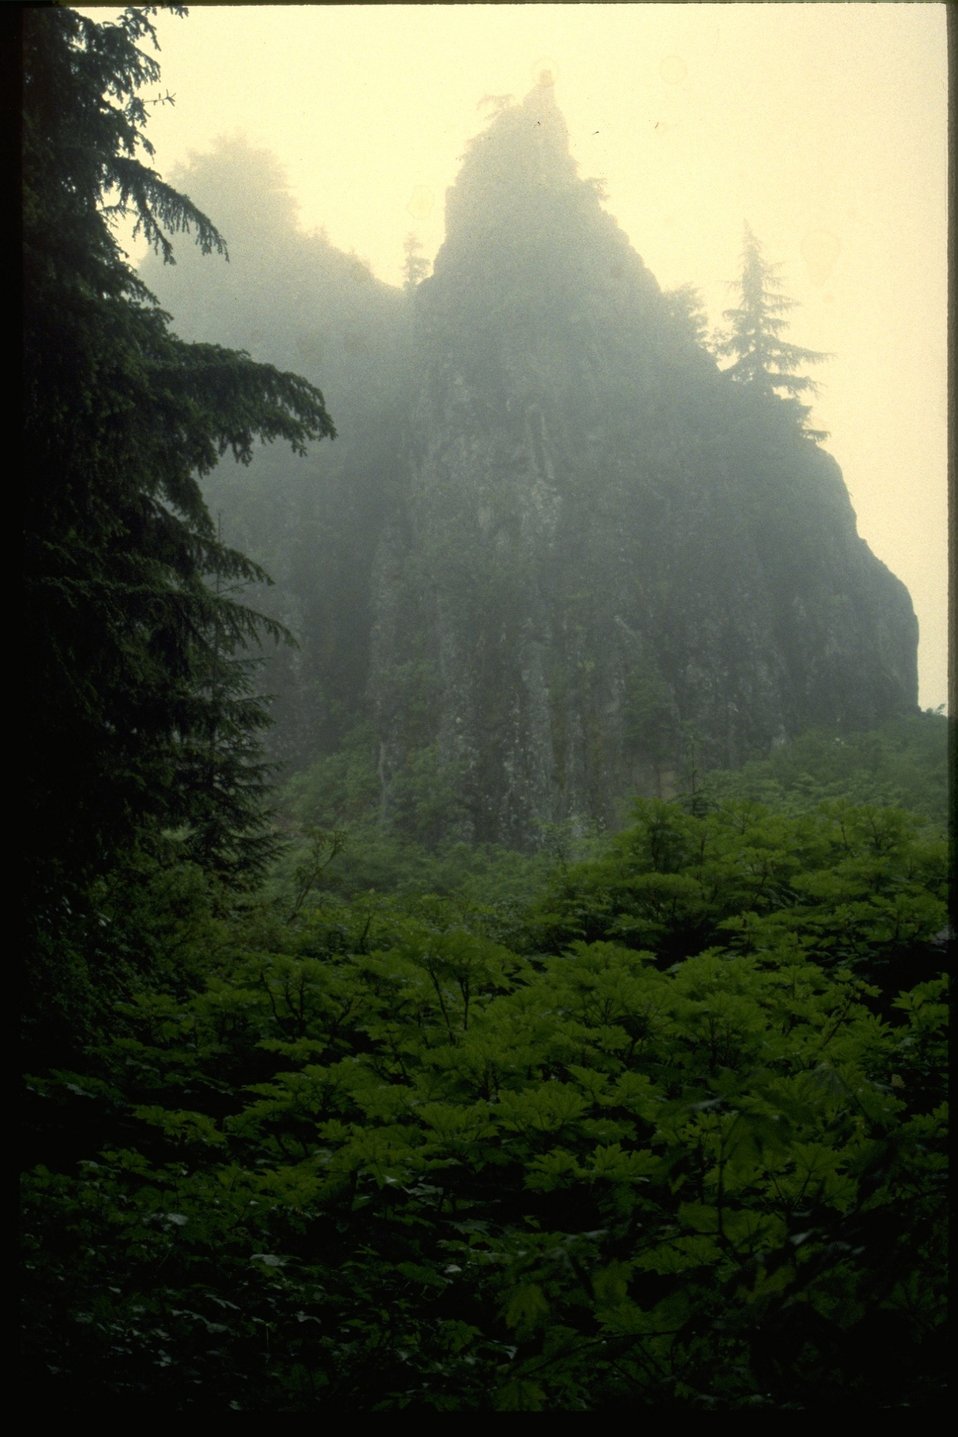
Picture of trees along the Table Rock Trail.